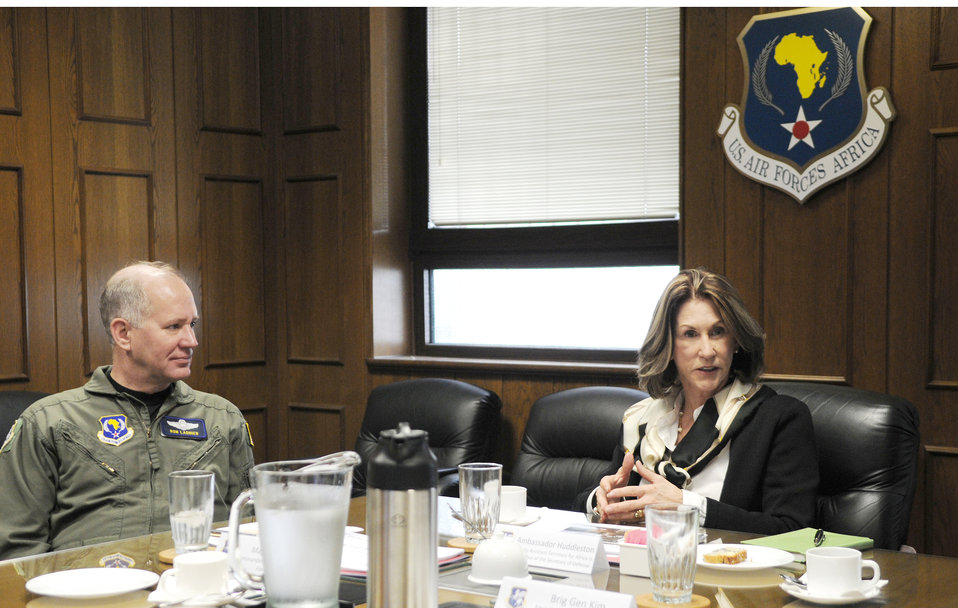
Senior DOD leader visits 17th Air Force officials

Deputy Assistant Secretary of Defense for African Affairs Vicki Huddleston talks with 17th Air Force officials Feb. 24, 2010, at Ramstein Air Base, Germany. Ms. Huddleston met with senior staff directors to discuss component programs and initiatives and toured the headquarters facility to meet with some of the Airmen whose efforts are supporting U.S. government objectives on the continent.